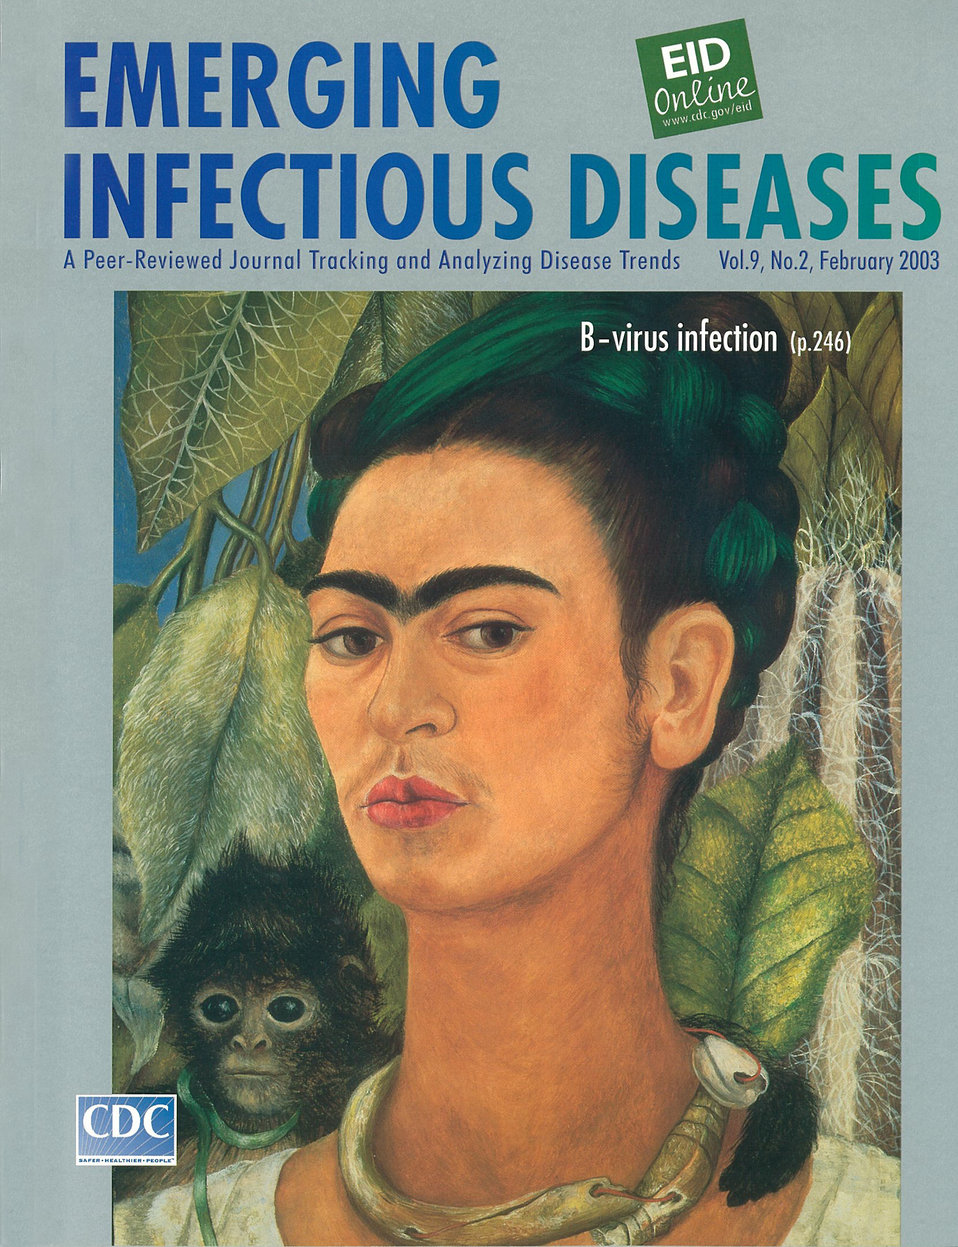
Emerging Infectious Diseases (EID) cover artwork for Volume 9, Number 2, February 2003 issue.